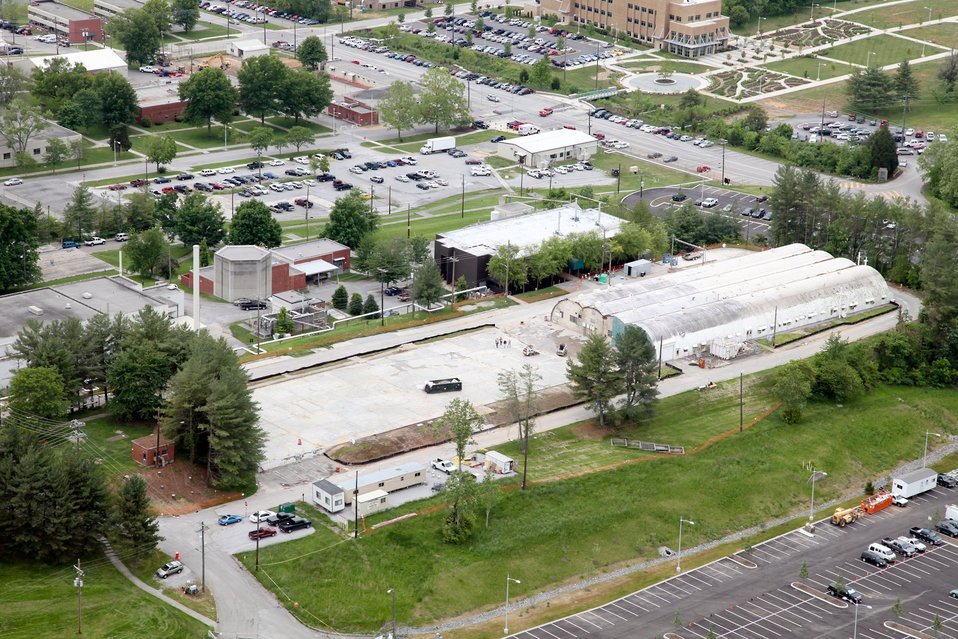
Demolition efforts under way at ORNL’s 2000 Complex

Oak Ridge National Laboratory's 2000 Complex -- a collection of vacant and rusting post-war 'temporary' buildings -- is being demolished by UT-Battelle as part of the American Recovery and Reinvestment Act (ARRA) funded Oak Ridge Environmental Management cleanup efforts.

In addition to ridding the Laboratory campus of the outdated and disused structures, the 2000 Complex demolition reduces risk by eliminating ongoing hazardous material releases, preventing hazardous material releases if the buildings were to collapse, and removing buildings that present fire hazards to surrounding facilities.